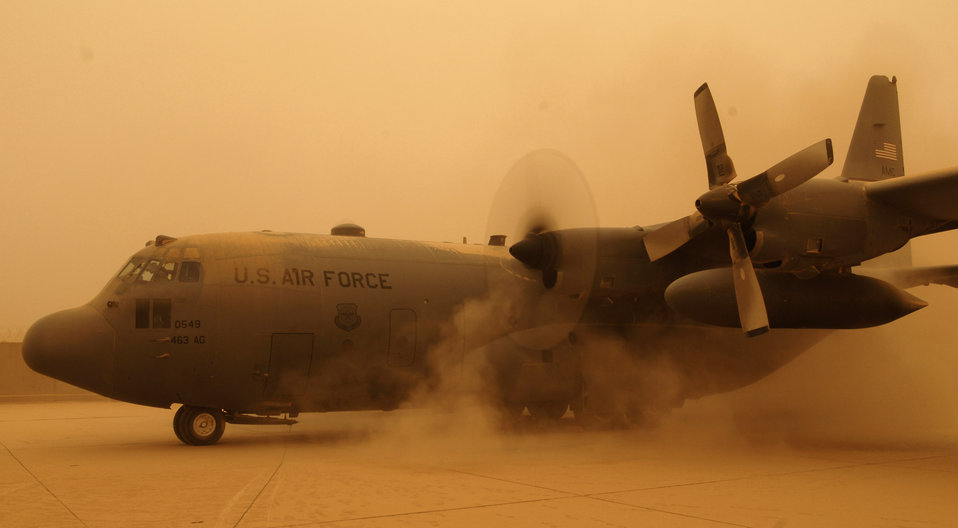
It's just blowing in the wind

A C-130 Hercules starts up one of its four engines Sept. 15 at Joint Base Balad, Iraq, kicking up a cloud of sand. The C-130 is deployed to the 777th Expeditionary Airlift Squadron here from Little Rock Air Force Base, Ark.